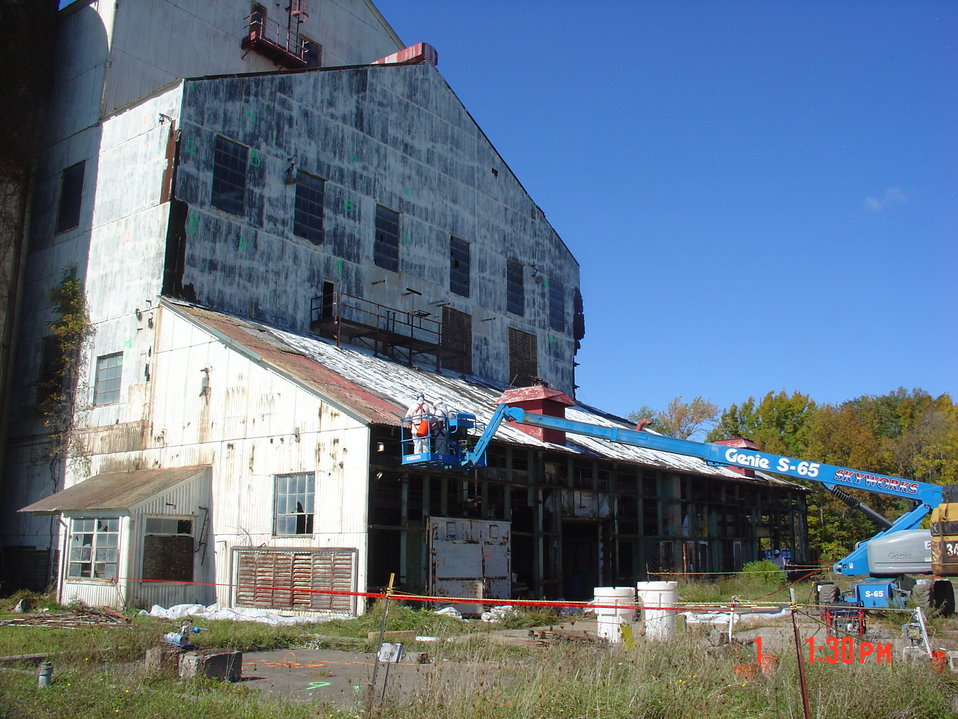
Building 401 asbestos removal worker on lift.

Activities from the Niagara Falls Storage Site, which is associated with the former Lake Ontario Ordnance Works. Formerly Utilized Sites Remedial Action Program (FUSRAP), a program initiated in 1974 to identify, investigate and clean up or control sites that were part of the Nation's early atomic energy and weapons program. Activities at the sites that are eligible for FUSRAP were conducted by Manhattan Engineer District (MED) or the Atomic Energy Commission (AEC), both predecessors of the Department of Energy (DOE). The U.S. Army Corps of Engineers was assigned management of FUSRAP by Congress in 1997.